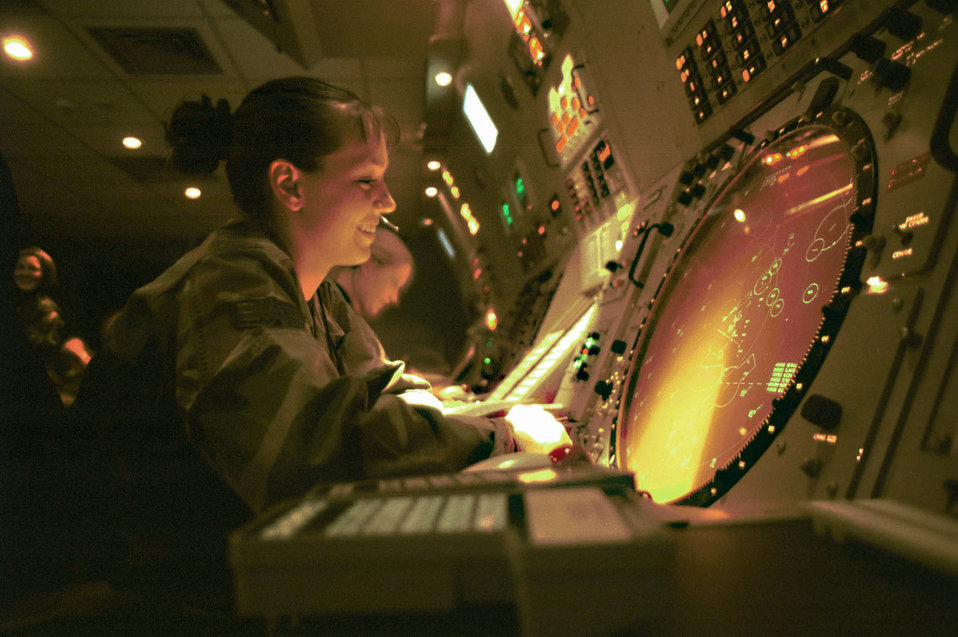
Air traffic control

ROYAL AIR FORCE LAKENHEATH, England -- Senior Airman Elizabeth Hand works in radar approach control in the base operations building here. Part of her duties include providing expeditious airflow for aircraft flying over RAF Lakenheath and RAF Mildenhall airspace. She is an air traffic controller with the 48th Operations Support Squadron, 48th Fighter Wing.